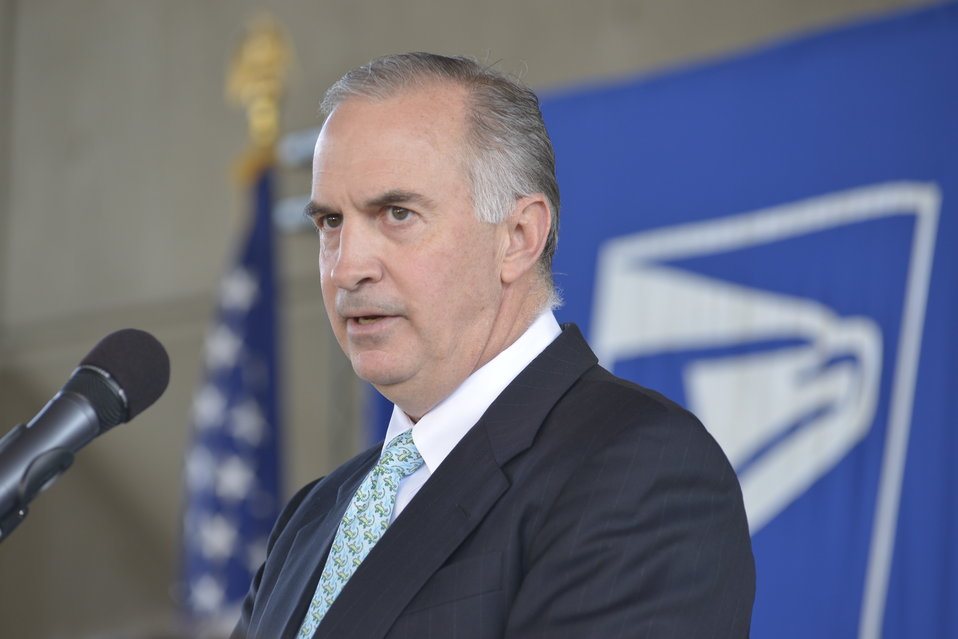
U.S Postal Services introduces a new Global: Sea Surface temperatures forever stamp at the Earth Day program at Department of Energy on April 22, 2014. ( T.Day, C.Williams, C.Anderson II, J.Colin Ph.D, Dr. K. Sullivan, K.Tobin Ph.D, W. Gicher Jr)